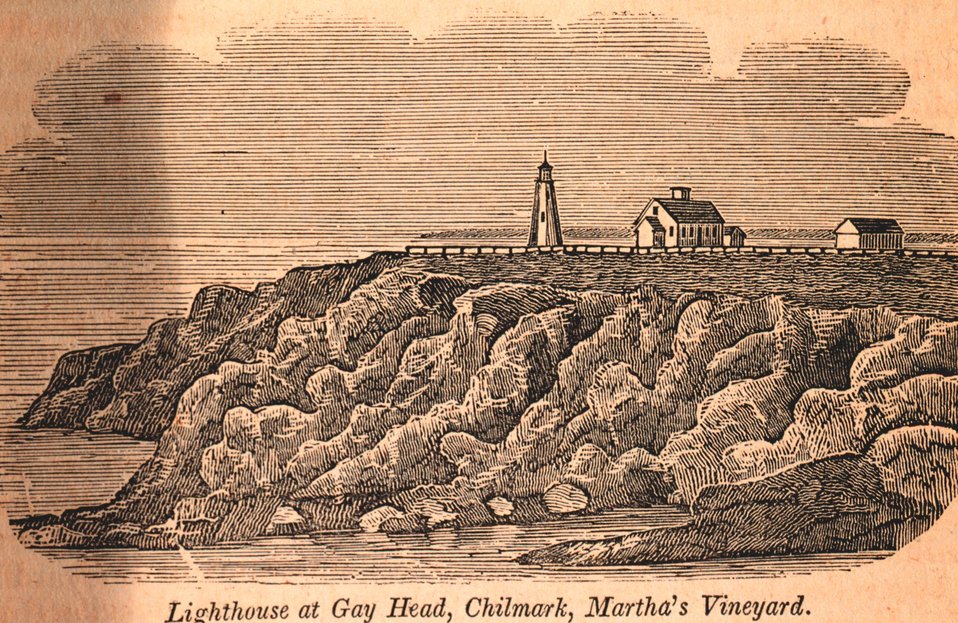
The Gay Head Lighthouse on the west end of Martha's Vineyard. Gay Head was named for the multi-colored strata which presented a beautiful and cheerful sight on a clear day. In: Historical Collections ... of Every Town in Massachusetts. 1841.